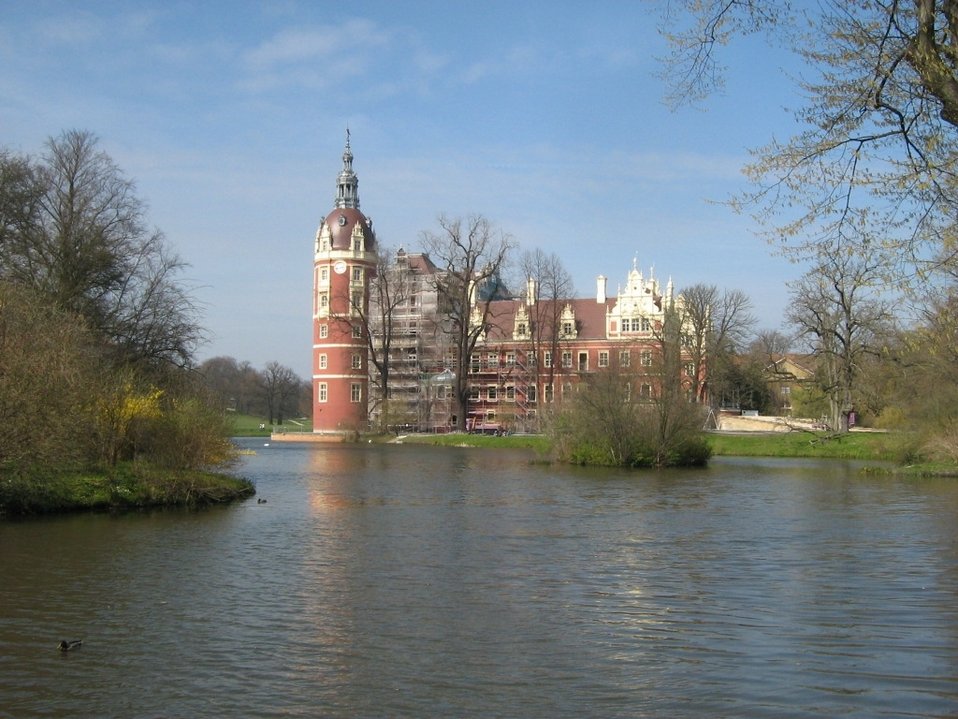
Deutsch: Das Neue Schloss Muskau in Bad Muskau, Sachsen. The New Palace Muskau (Bad Muskau, Saxony, Germany).